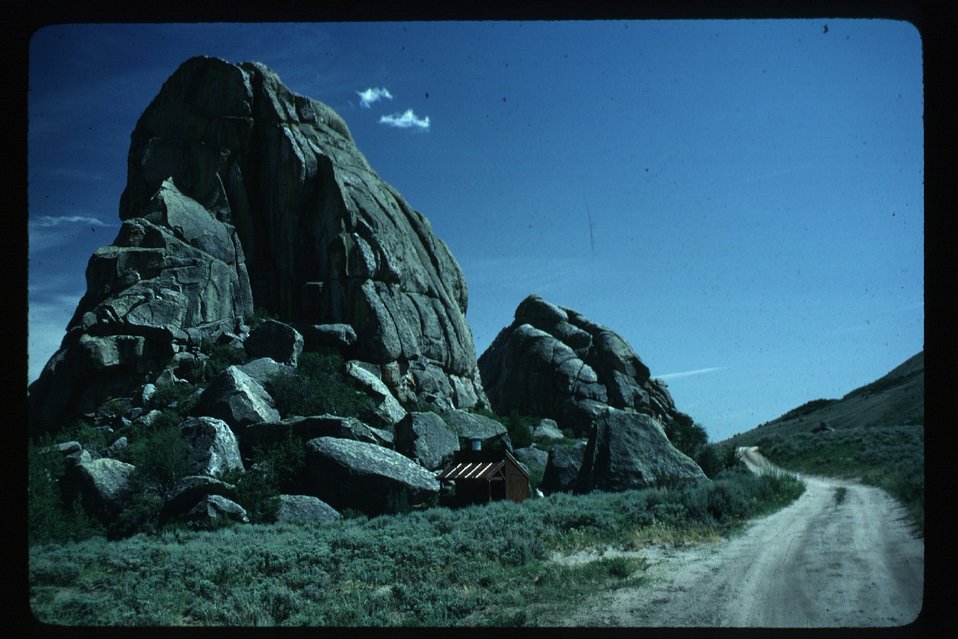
Rock formation Burley City of Rocks Burley Field Office USRD Upper Snake River District